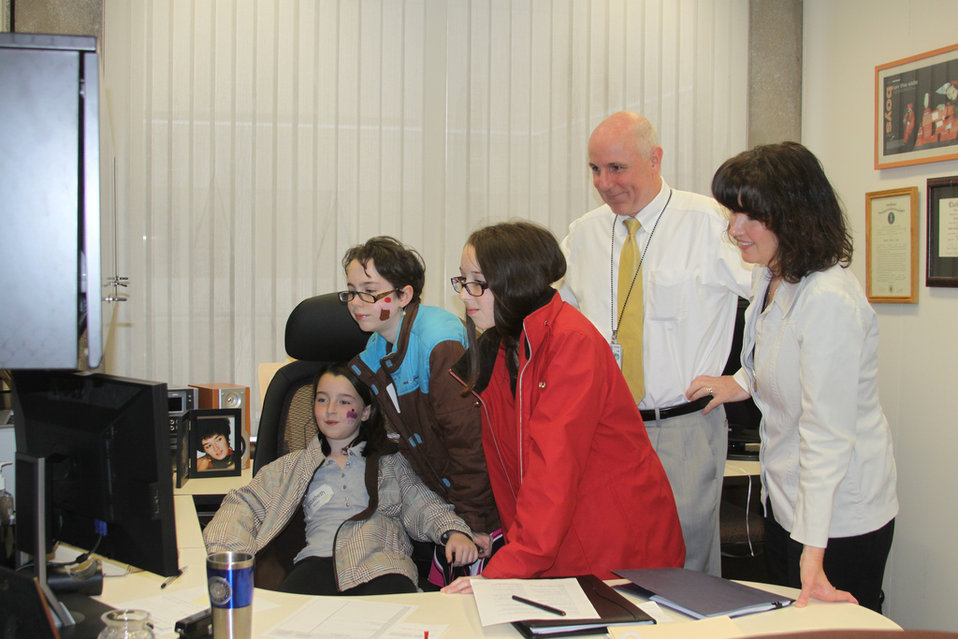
Visiting the Office